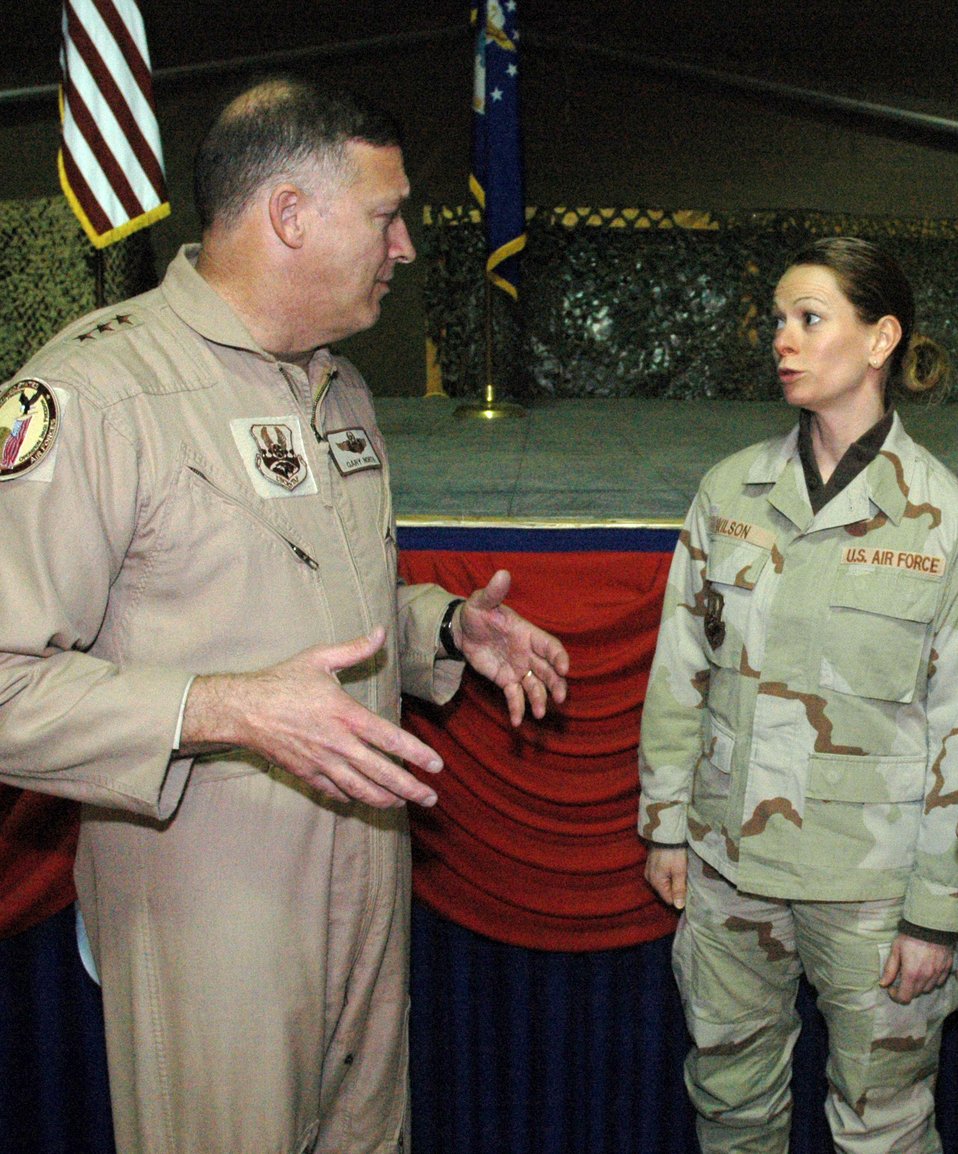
General North visits Manas Air Base

Lt. Gen. Gary North speaks with Tech. Sgt. Robyn Wilson about her ideas for streamlining the flow of transient ground forces during a visit to Manas Air Base, Kyrgyzstan, March 7. Sergeant Wilson is deployed the 376th Expeditionary Logistics Readiness Squadron from the 87th Aerial Port Squadron at Wright-Patterson Air Force Base, Ohio. General North is the commander of 9th Air Force and U.S. Central Command Air Forces at Shaw Air Force Base, S.C.